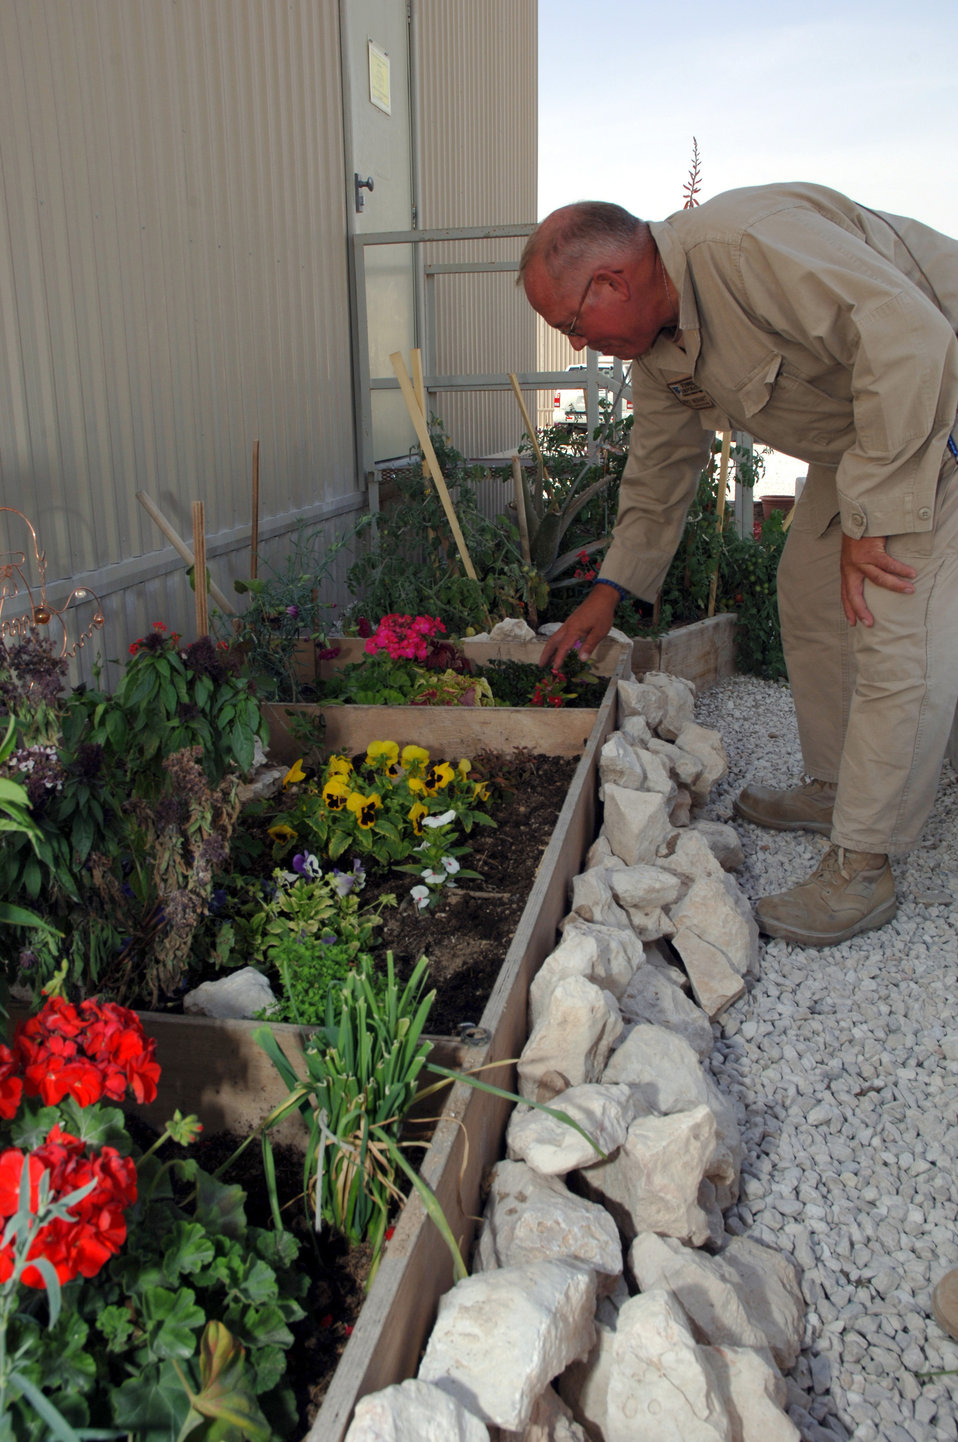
Garden in the desert

Bruce Neihart, a contractor at a deployed location in Southwest Asia checks the growth of his side project -- a mini garden with flowers, herbs, and tomatoes Wednesday, Mar. 8, 2006. He is well known for his tomatoes and other veggies sprouting up here in the desert. Mr. Neihart is with the 379th Expeditionary Logistics Readiness Squadron.